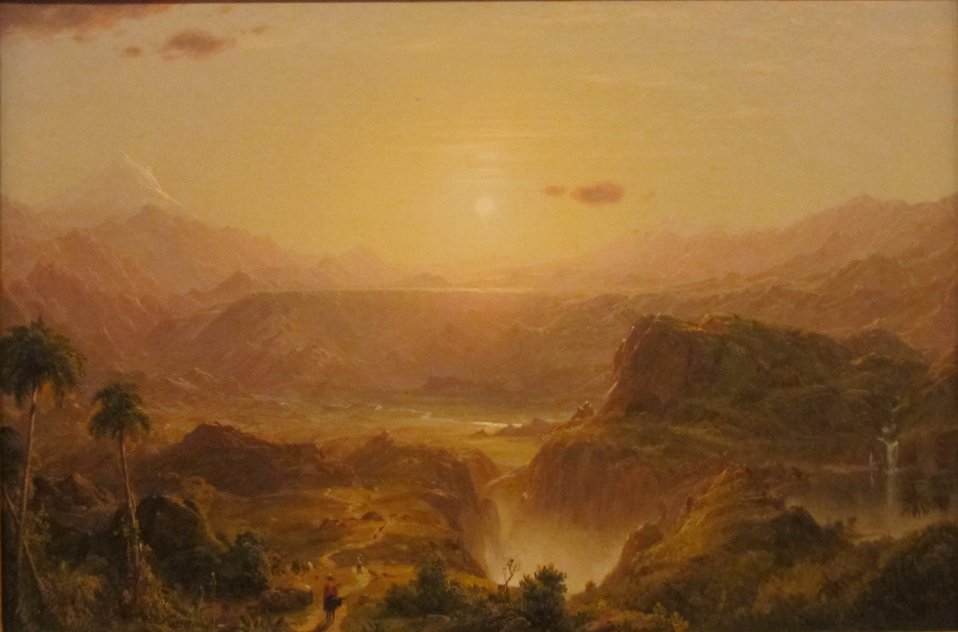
The Andes of Ecuador — oil on canvas painting by Frederic Edwin Church, 1855, Honolulu Academy of Arts.